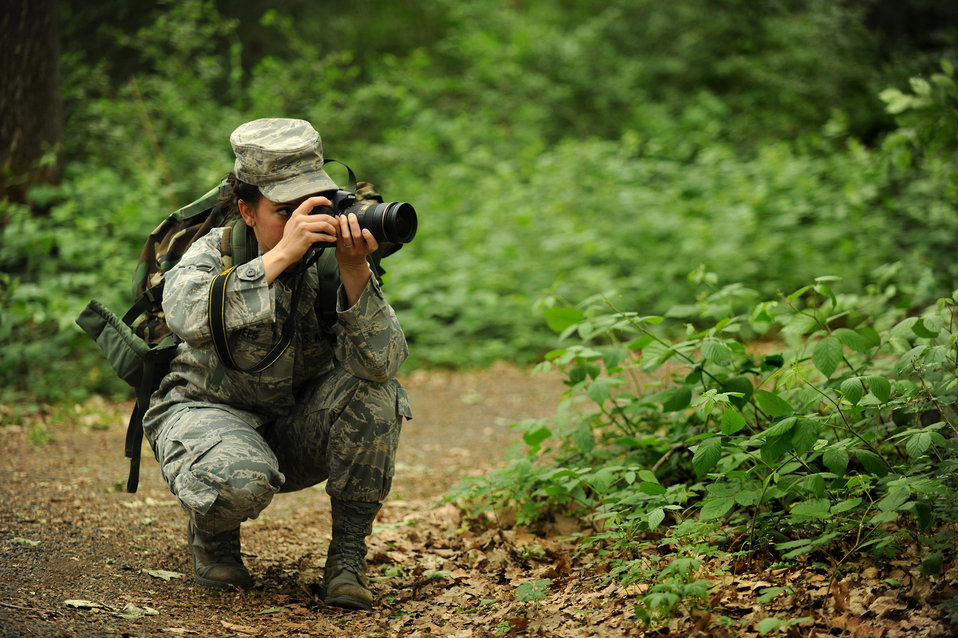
Picture this

Airman 1st Class Brittney Frees takes a photograph May 17, 2011, during a ruck march at Spangdahlem Air Base, Germany, as part of National Police Week. Airman Frees is a photojournalist assigned to the 52nd Fighter Wing.